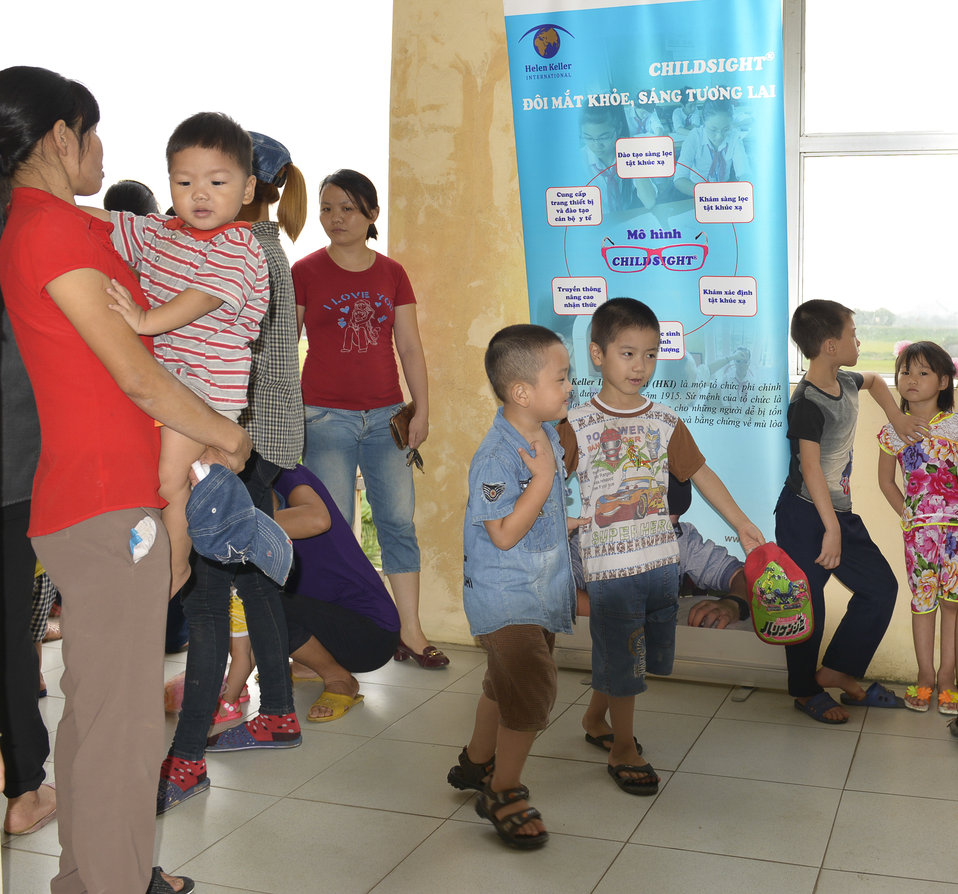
Eye screening for kindergarten children in Quoc Oai district of Hanoi

Quoc Oai, Hanoi. May 31, 2014.